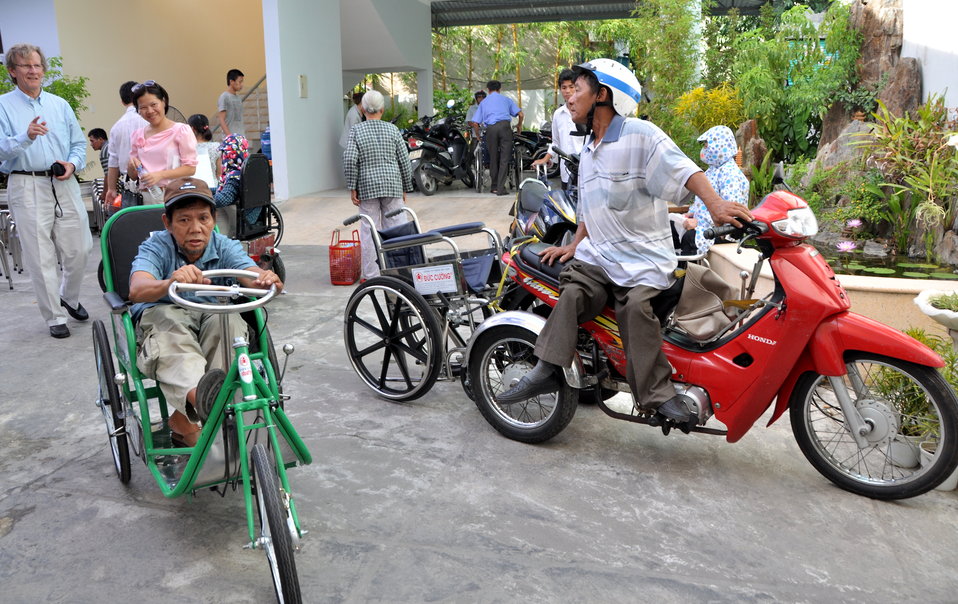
USAID Project Supports Rehabilitation Department for Children and Wheelchair Distribution in Danang

Beneficiaries in Danang, Vietnam, receive wheelchairs.